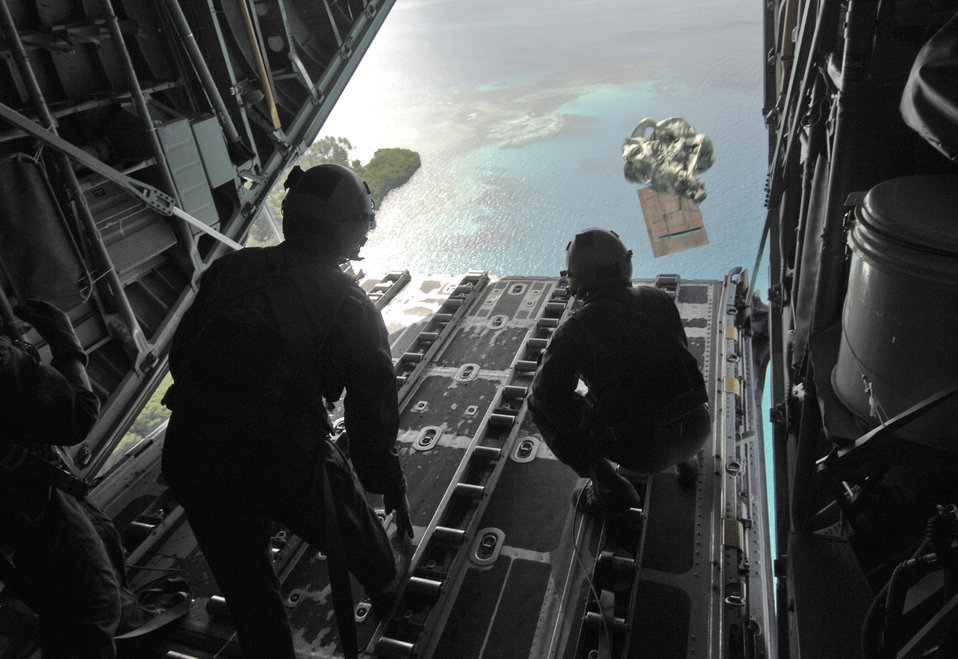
Operation Christmas Drop

Senior Airman Robert Gore and Airman 1st Class Dustin Deveaux push out a pallet of donated goods from a C-130 Hercules during Operation Christmas Drop Dec. 19 over the Pacific islands of Chuuk. In all, more than 180 boxes were built for the humanitarian mission, making 2008 one of the largest drops in Operation Christmas Drop's 57-year history. Airmen today continue the tradition delivering supplies to remote islands of the Commonwealth of the Northern Marianas Islands, Yap, Palau, Chuuk and Pohnpei. Airmen Gore and Deveaux are loadmasters from the 36th Airlift Squadron from Yokota Air Base, Japan.